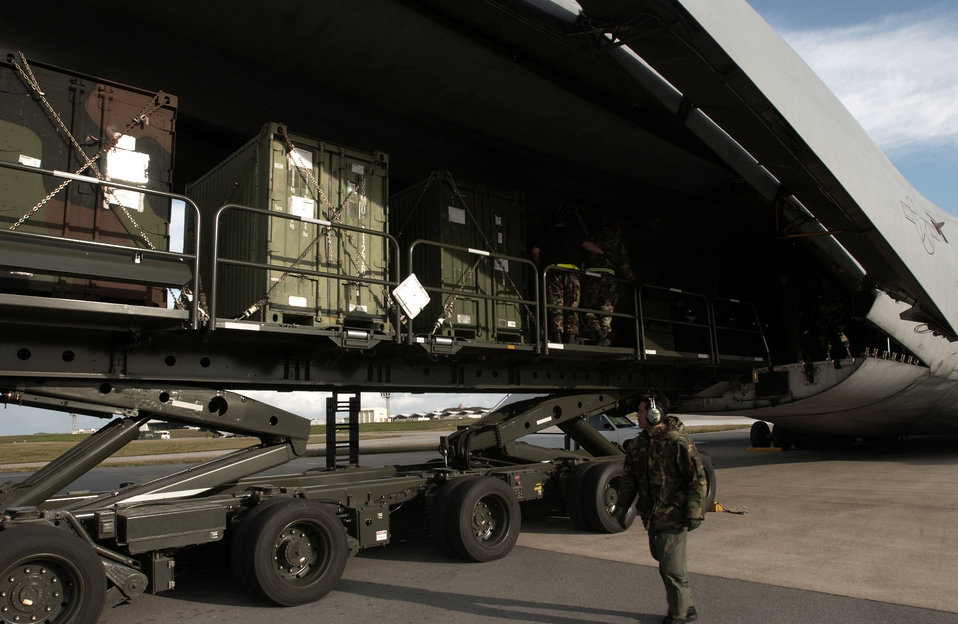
Humanitarian aid

KADENA AIR BASE, Japan -- Airmen here load equipment and supplies bound for Southeast Asia as part of disaster relief following a 9.0 magnitude earthquake that struck Dec. 26 off the coast of Indonesia causing tsunami waves that have affected 12 countries. More than 36,000 meals and four aircraft pallets of fresh water were processed through the base's cargo area. The 18th Wing is providing relief supplies and personnel to help with the humanitarian effort.